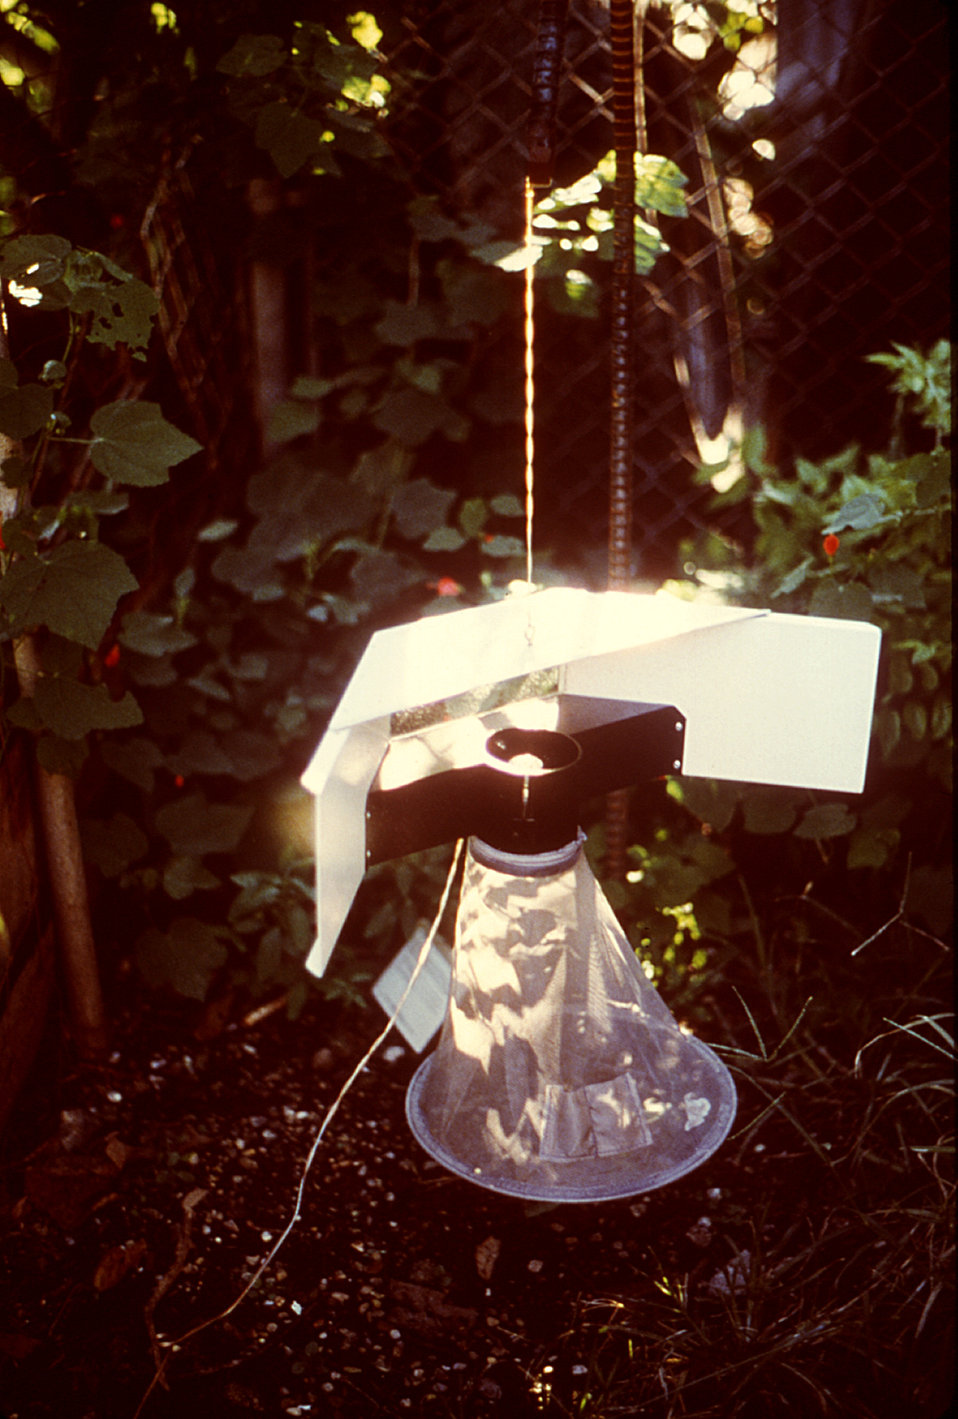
This 1979 photograph taken in New Orleans, Louisiana, depicted a mosquito light trap especially designed to attract, and trap Aedes aegypti mosquitoes for analysis.